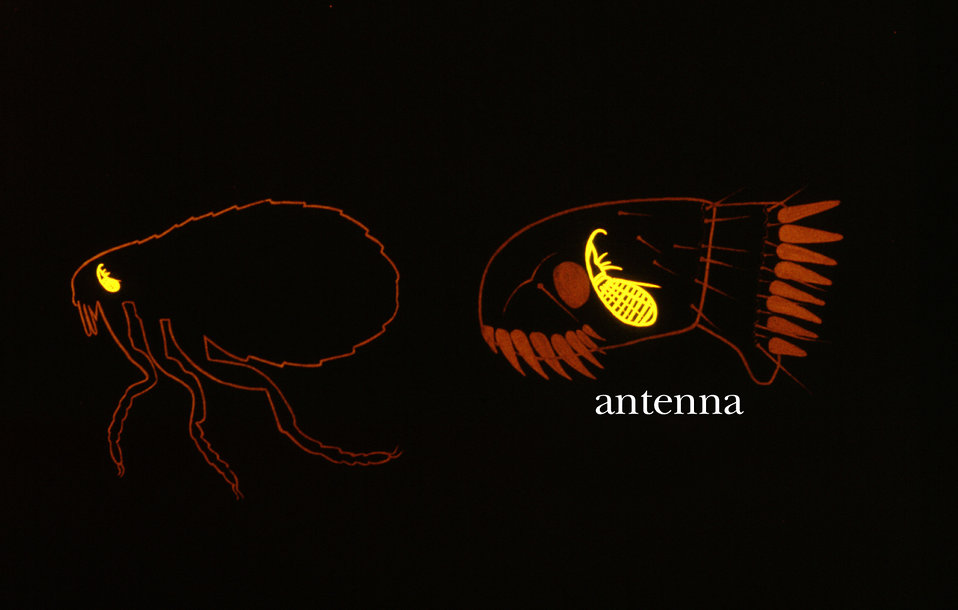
This illustration depicts the location and morphology of a flea's antennae, one of the identifying characteristics of these insects.